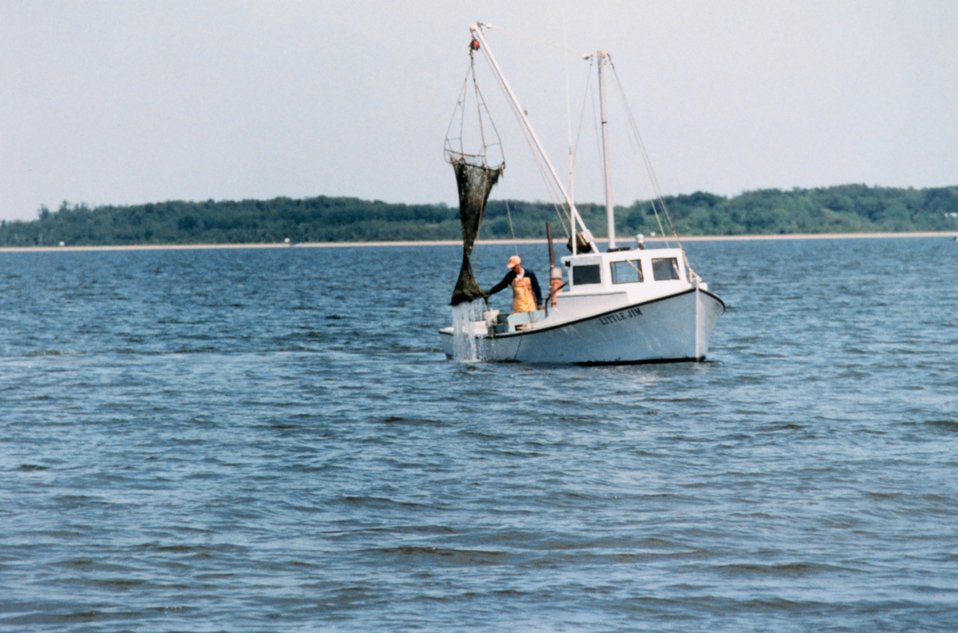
Clam dredging - although maintaining the tradition of the Chesapeake waterman, this harvesting method further stresses submerged aquatic vegetation.